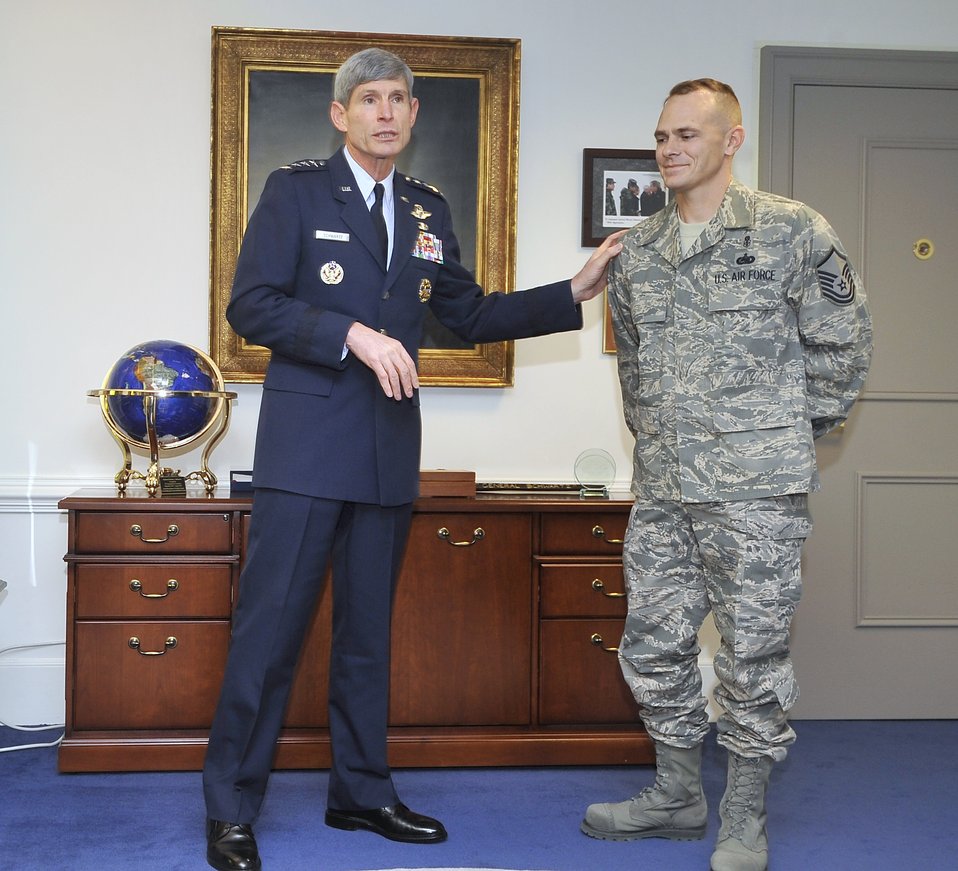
Airman receives Purple Heart

Air Force Chief of Staff Gen. Norton Schwartz talks about Master Sgt. David Webber during his presentation of the Purple Heart medal to Sergeant Webber Jan. 8 in the Pentagon.